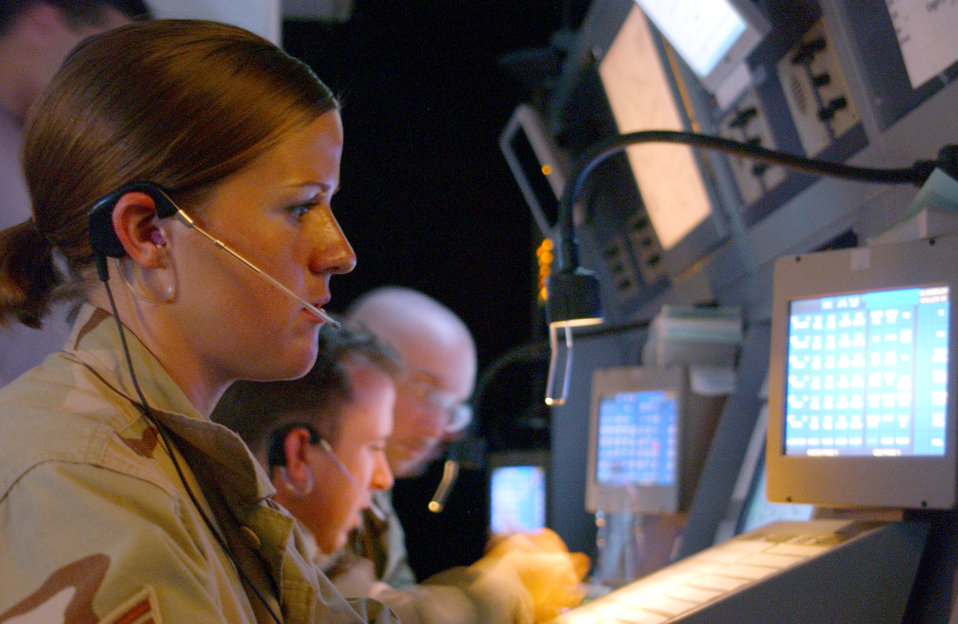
Controlling the board

Staff Sgt. Brandi Cannedy tracks aircraft on her scope at Balad Air Base, Iraq, Aug. 30. Transportable radar approach control Airmen monitor all aircraft, military or civilian, in central Iraq.